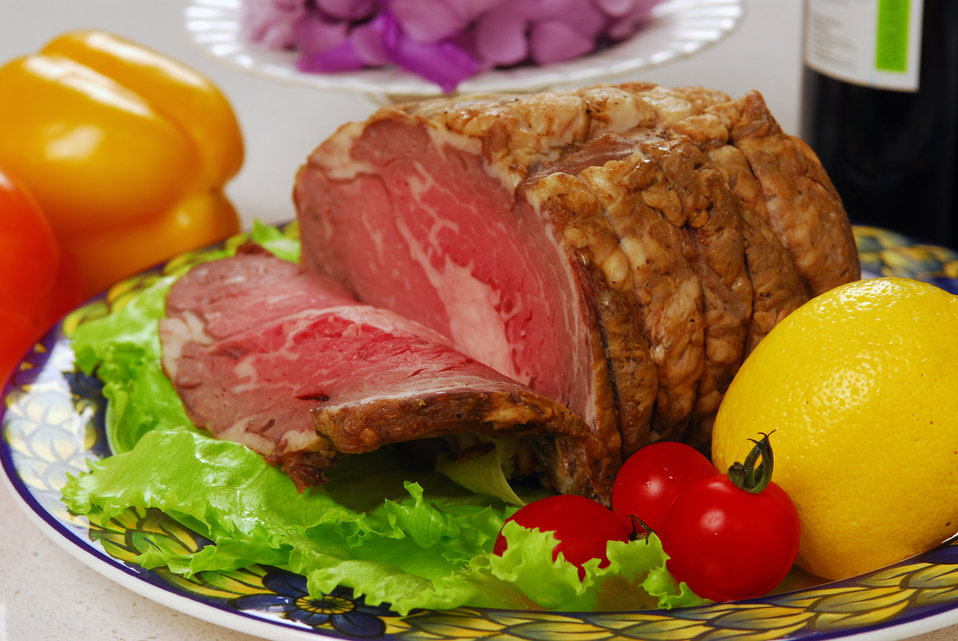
A chunk of beef 1

A chunk of beef.